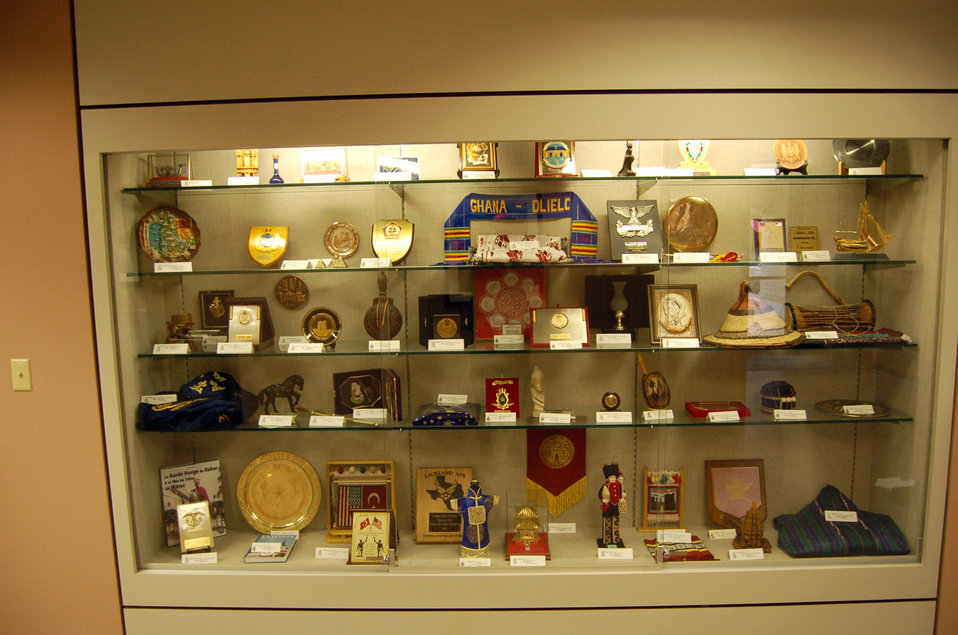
DLI fosters international goodwill

Gifts donated to the Defense Language Institute English language course are displayed in a case at Lackland Air Force Base, Texas. The institute receives so many gifts that they have to rotate new items in every two weeks.